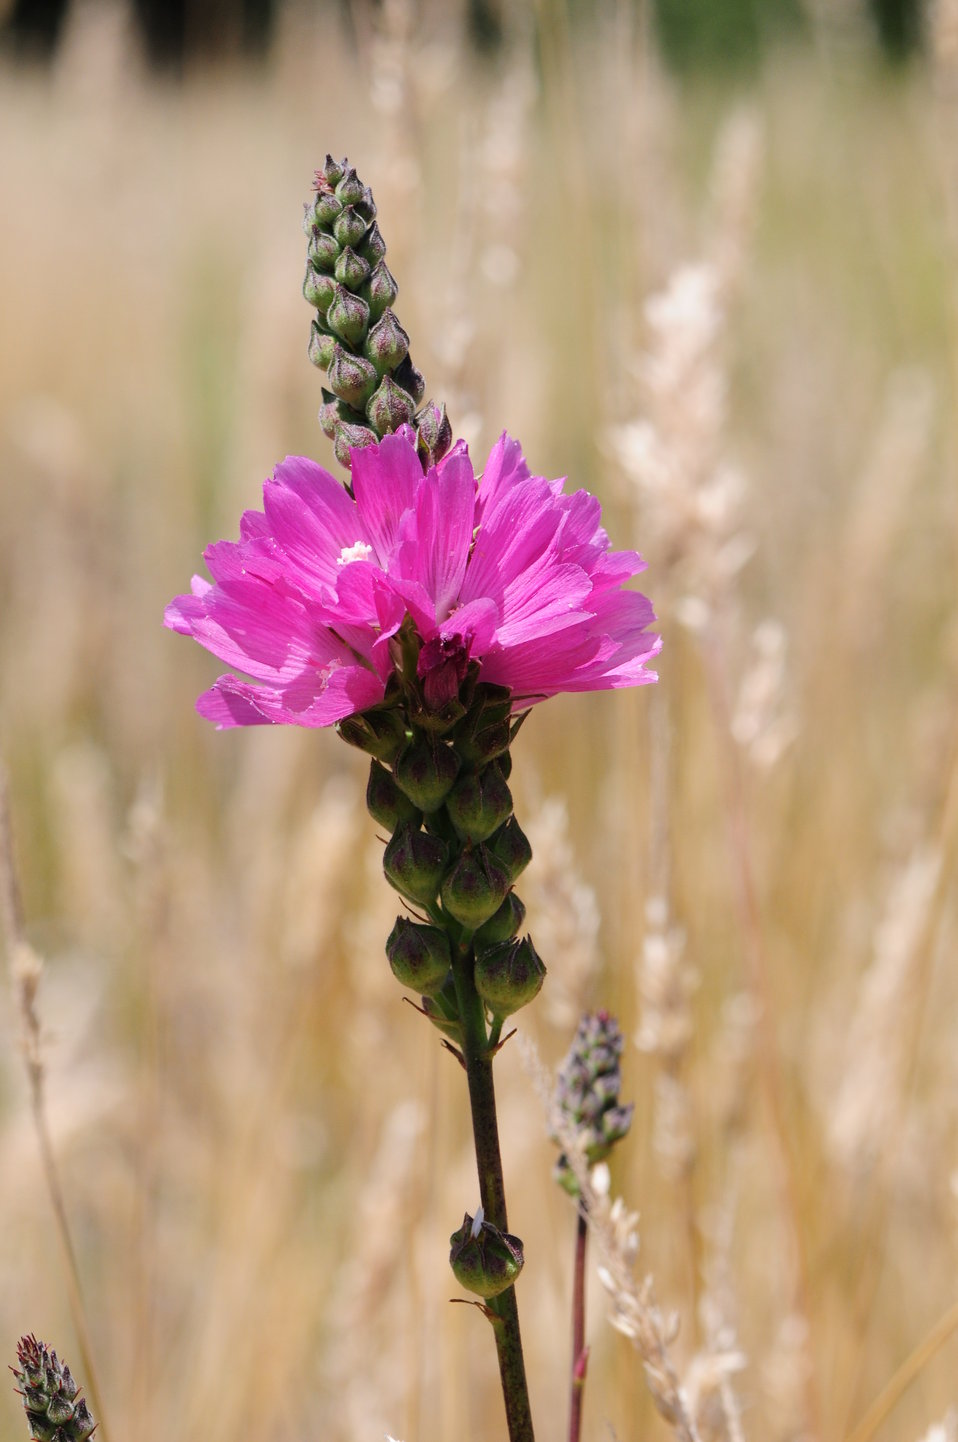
Kenwood Marsh checkermallow

Photo Credit: Josh Hull, USFWS

The endangered Kenwood Marsh checkermallow, also known as Kenwood Marsh checkerbloom, is a perennial herb that flowers from late June to September. The plant lives in freshwater marshes of Kenwood Marsh and Knight’s Valley in Sonoma County, California.